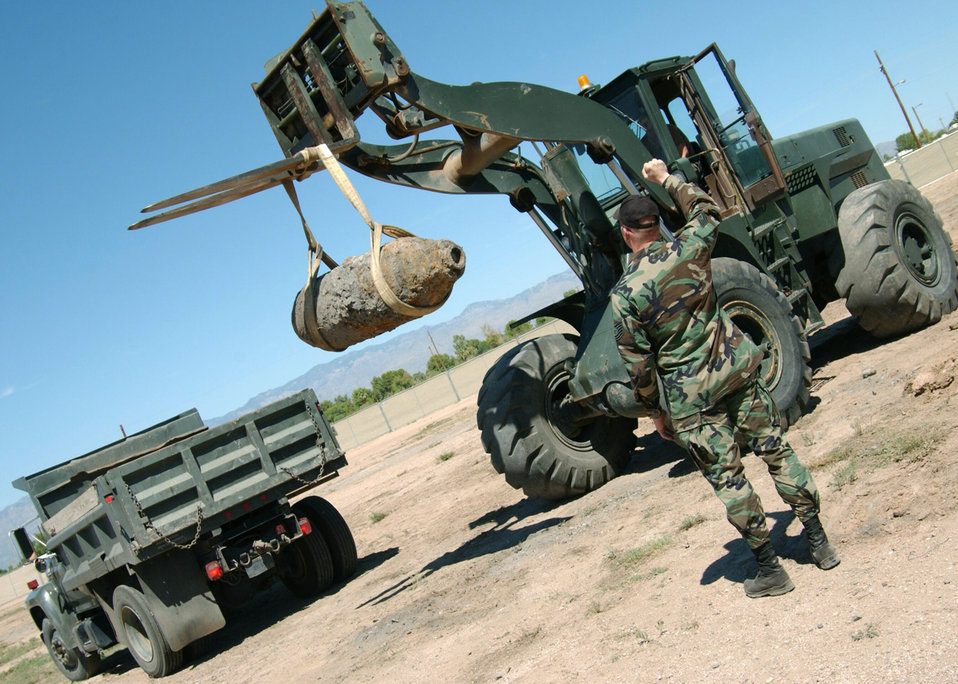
It's da bomb!

DAVIS-MONTHAN AIR FORCE BASE, Ariz. -- Tech. Sgt. Daryl Steck guides a truck back to load a World War II bomb that was discovered at a construction site here Sept. 10. Sergeant Steck is assigned to the 355th Civil Engineer Squadron.